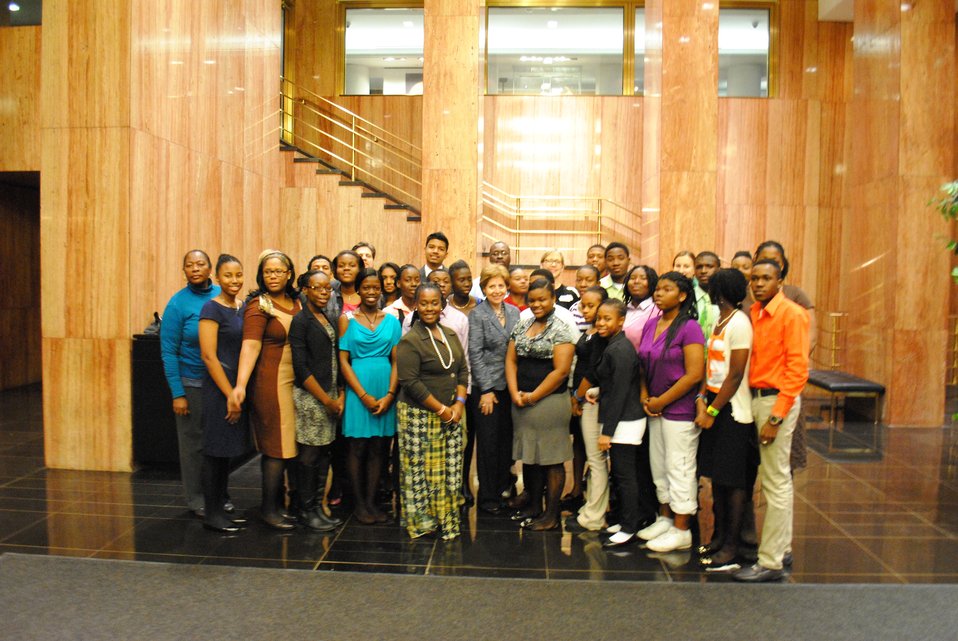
Caribbean Youth Ambassadors Pose for a Photo

Caribbean Youth Ambassadors participate in a conference on Ensuring a Secure Caribbean at the U.S. Department of State in Washington, D.C., on February 22, 2013.